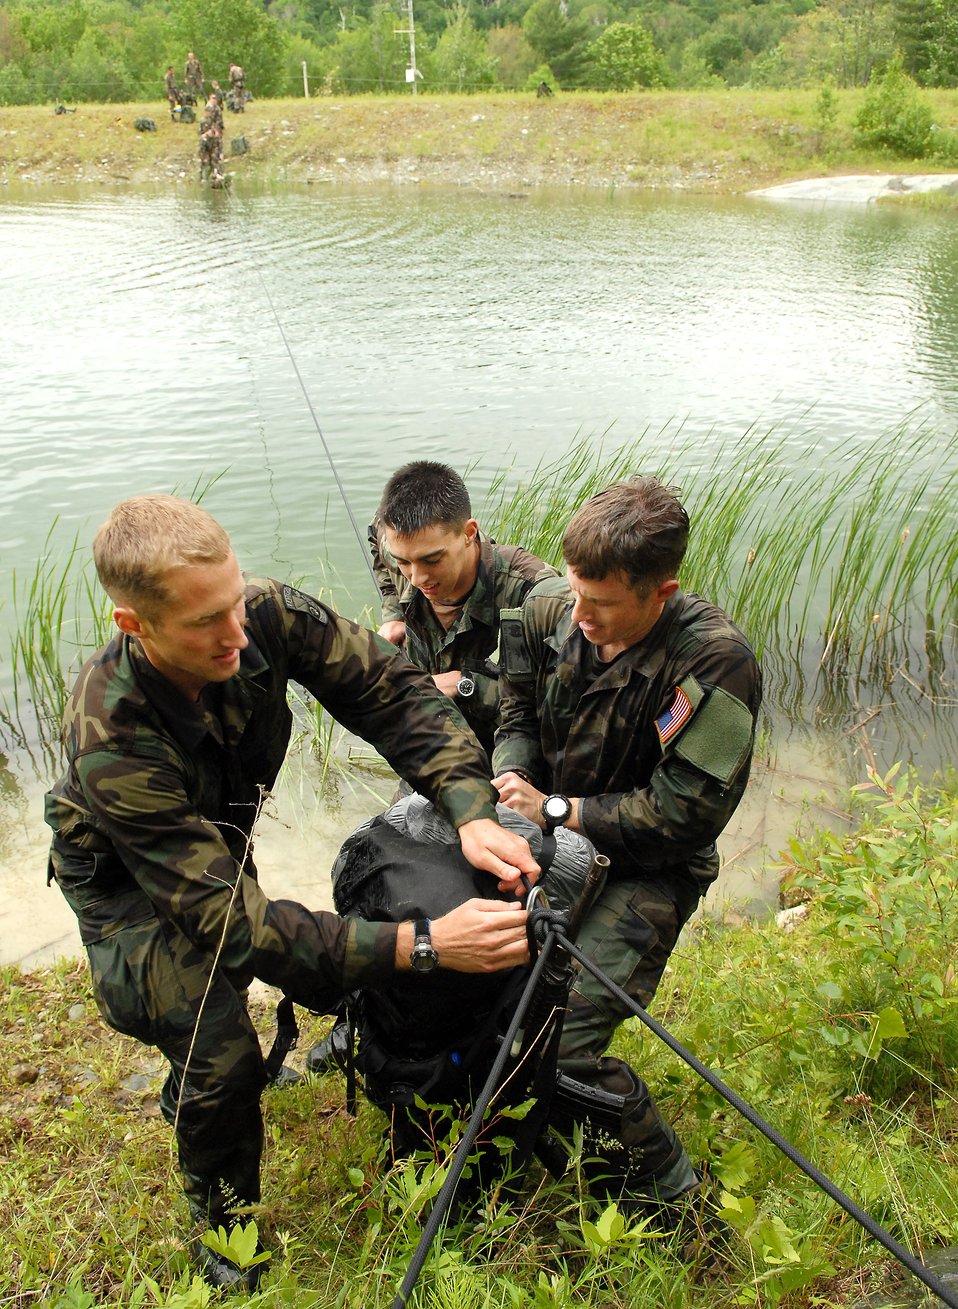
Joint training in Vermont mountains

Tech. Sgt. Dana Vaughan (right) unhooks his rucksack with help from two Army ROTC cadets after pulling himself across a cold Vermont pond on Thursday, June 8, 2006. Sergeant Vaughan, a pararescueman from Nellis Air Force Base, Nev., is attending a two-week summer mountaineer training course at the Vermont National Guard's Army Mountain Warfare School in Jericho, Vt.